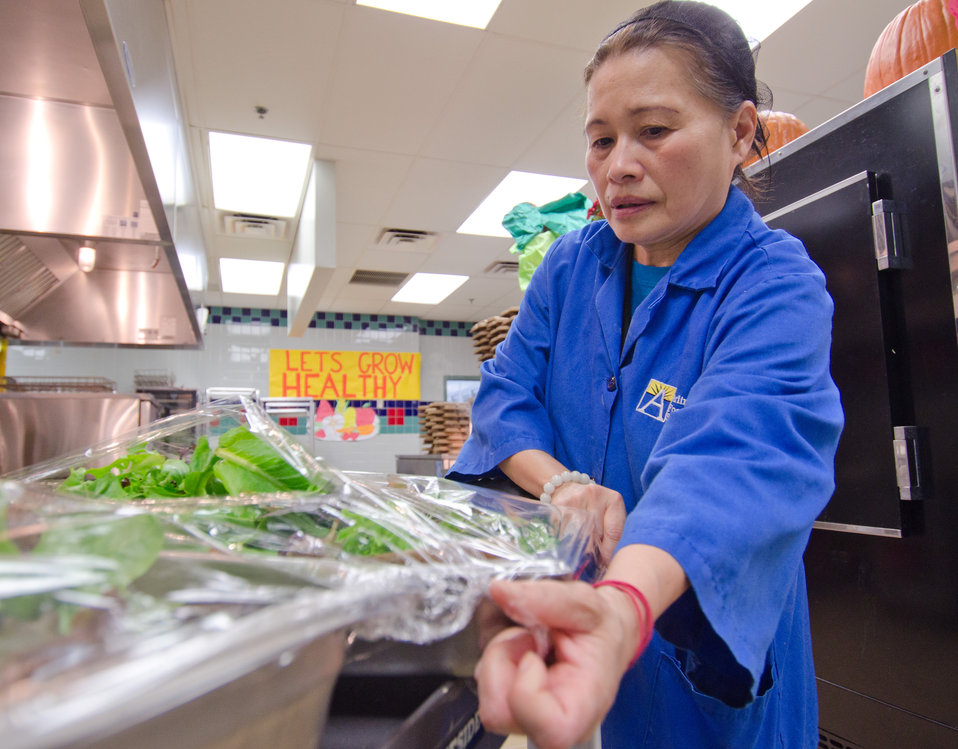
Food Service Manager Hoa Tran covers mixed lettuce for the school lunch program at Nottingham Elementary School in Arlington, VA, on Wednesday, October 12, 2011. Today's menu included roasted chicken, roasted butternut squash with dried cranberries, farm fresh mixed lettuce salad, turkey wraps, pita wedges, hot muffins, carrots, Asian pears and more.